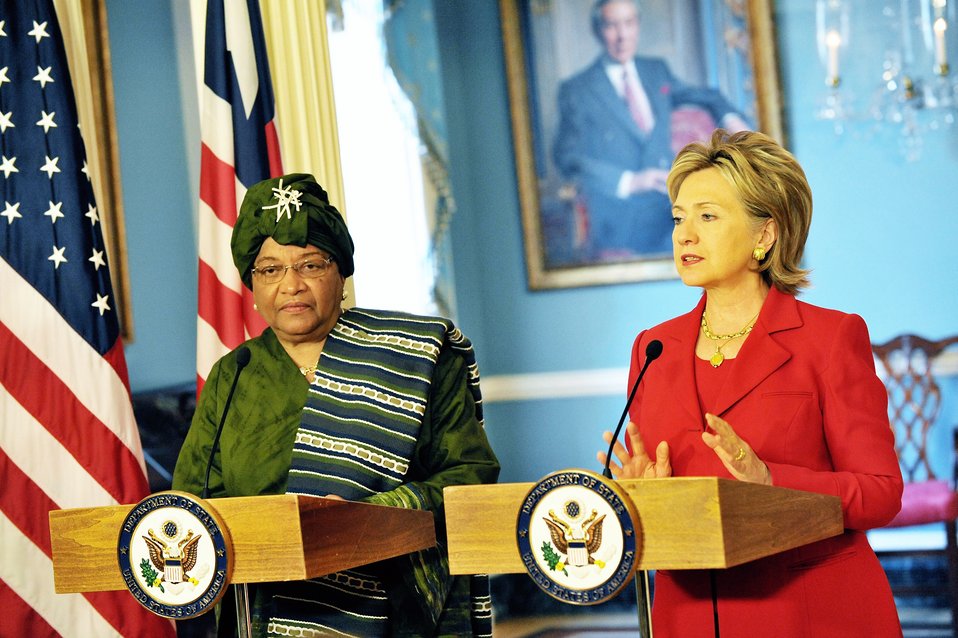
Secretary Clinton Meets With Liberian President

U.S. Secretary of State Hillary Rodham Clinton meets with Liberian President Ellen Johnson-Sirleaf at the U.S. Department of State in Washington, DC April 21, 2009.